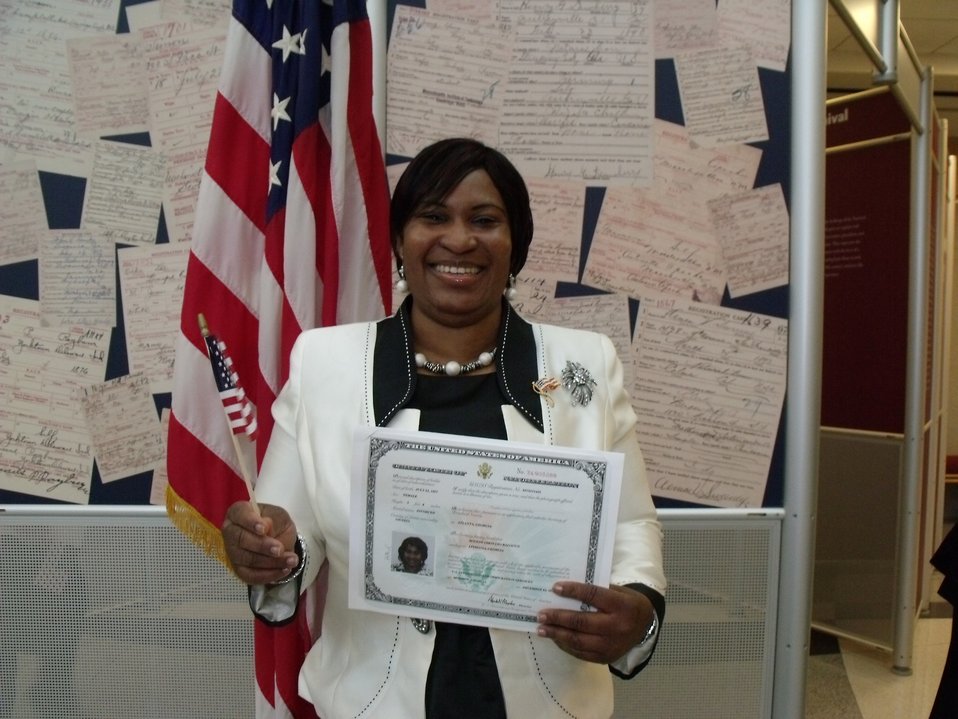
New Citizens